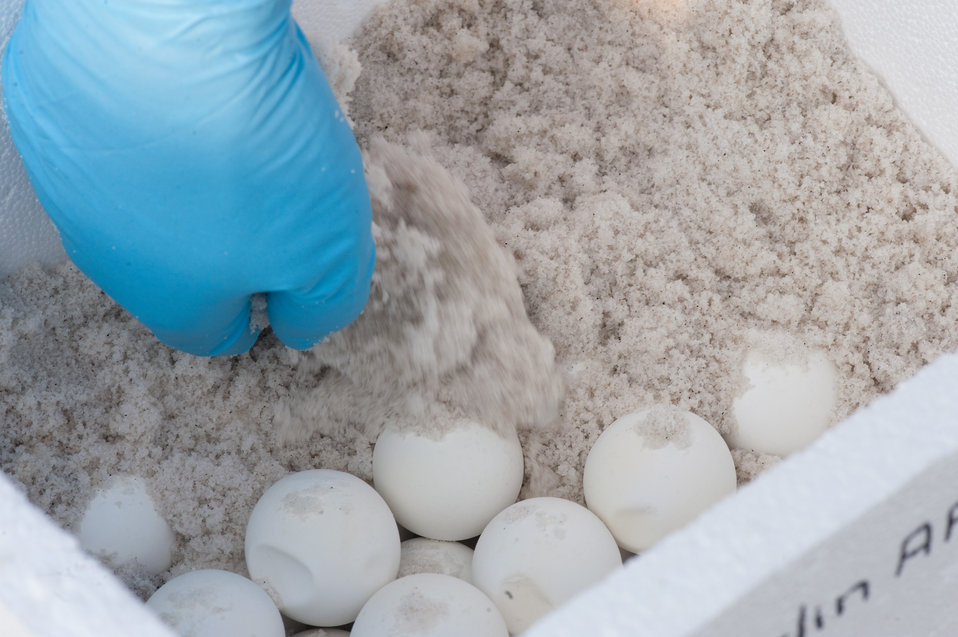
Turtle Eggs avoid Gulf Oil Danger

An inch of sand is distributed over the last of 112 Loggerhead sea turtle eggs in a Styrofoam cooler, ready for shippment from Eglin Air Force Base, Florida, on August 9, 2010. To date, Eglin has excavated more than 400 eggs. The 96th Civil Engineer Squadron is working with other governmental agencies, whose goal is the transportation of more than 700 nests from the Gulf Coast to the Atlantic coast. When they get there, eggs are monitored at a controlled climate facility, where they will be allowed to hatch in the cooler. Wildlife technicians will then release them into the ocean.